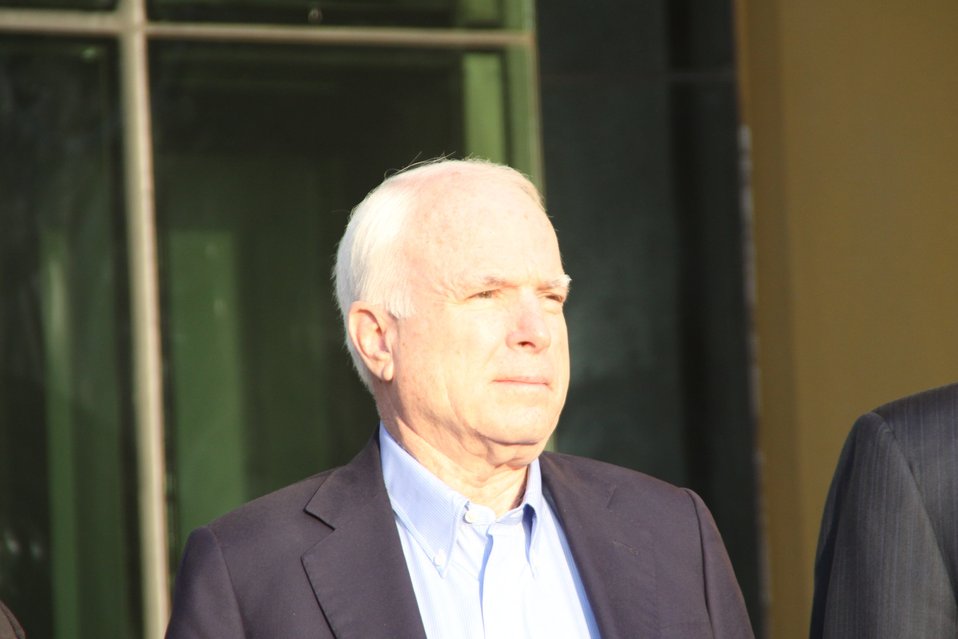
Senator McCain